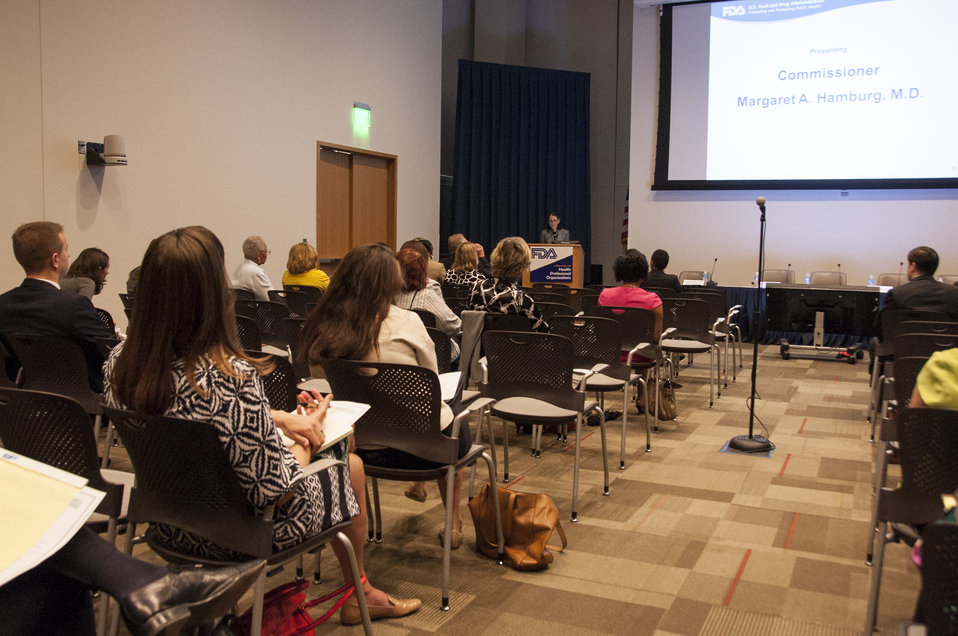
FDA's 2014 Health Professional Organizations Conference (1050)

May 14, 2014; Commissioner Margaret A. Hamburg made the introductory remarks at FDA's third annual Health Professional Organizations Conference, where some of the agency’s most senior leaders exchanged views and discussed issues of mutual interest with senior representatives from key health professional organizations. To learn more, go to FDA Voice.

This photo is free of all copyright restrictions and available for use and redistribution without permission. Credit to the U.S. Food and Drug Administration is appreciated but not required.

Privacy and use information: www.flickr.com/people/fdaphotos/